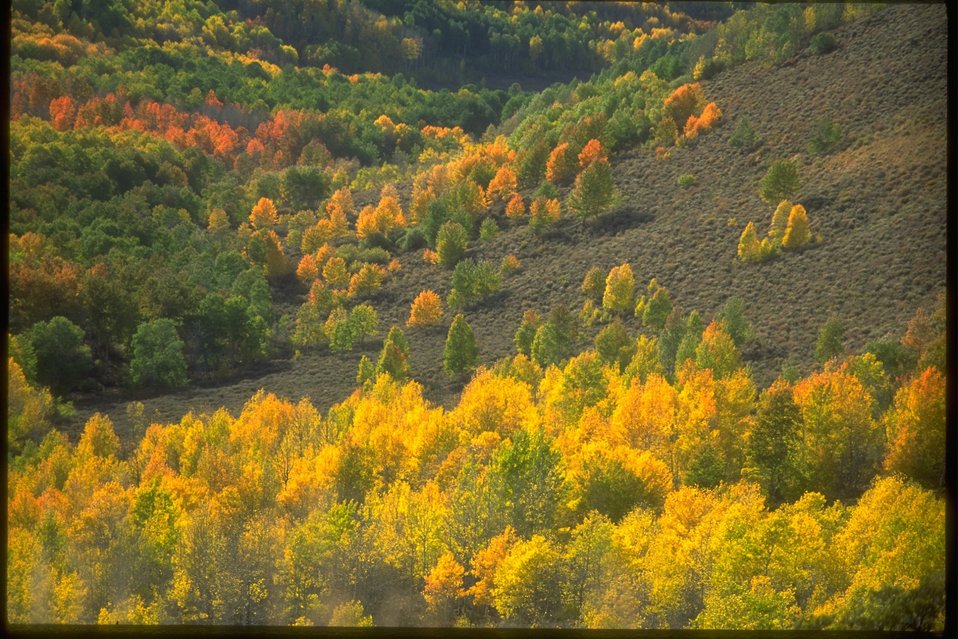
Steens Mountain series.